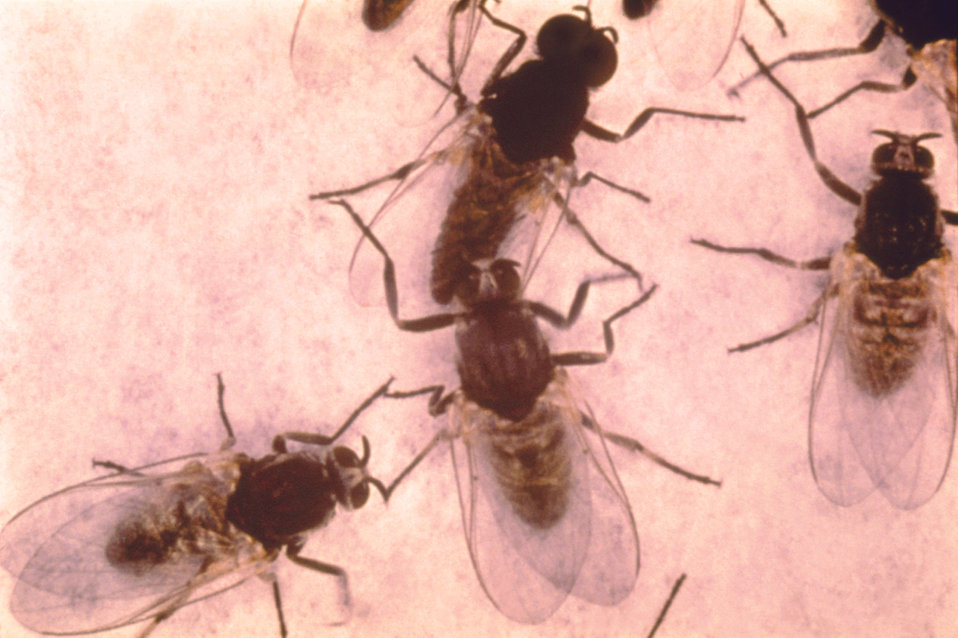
These are Simulium sp. of flies, or 'black flies', a vector of the disease, onchocerciasis, or 'river blindness'.